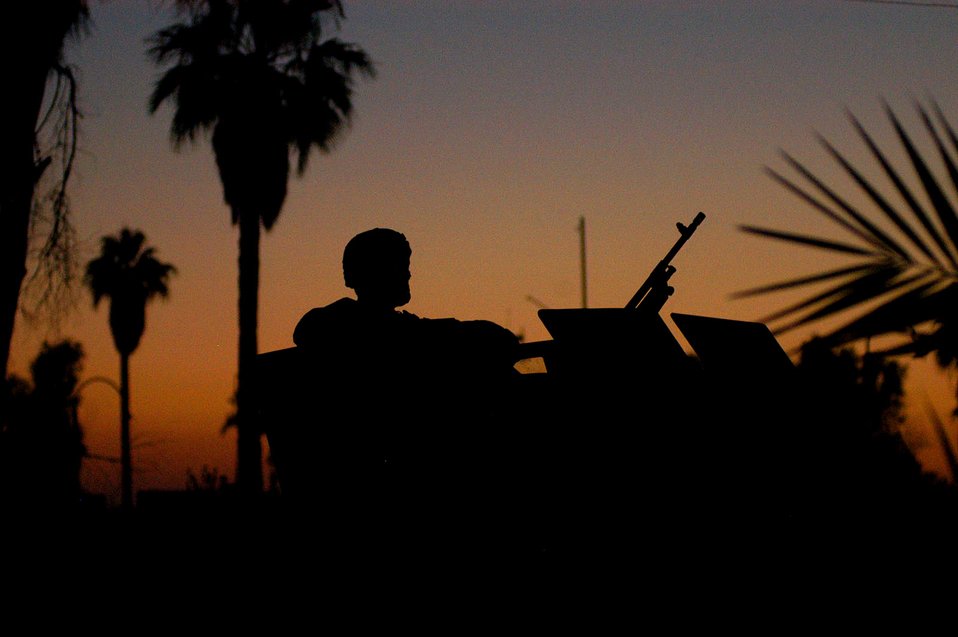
Deployed defenders show AF mission is more than just aircraft

An Airman from the 506th Expeditionary Security Forces Squadron at Kirkuk Regional Air Base, Iraq, sits atop a Humvee turret during an evening patrol. While typical perceptions associated with the Air Force in combat might involve aircraft dropping bombs on targets, the several hundred security forces Airmen deployed here are proving these stereotypes outdated.